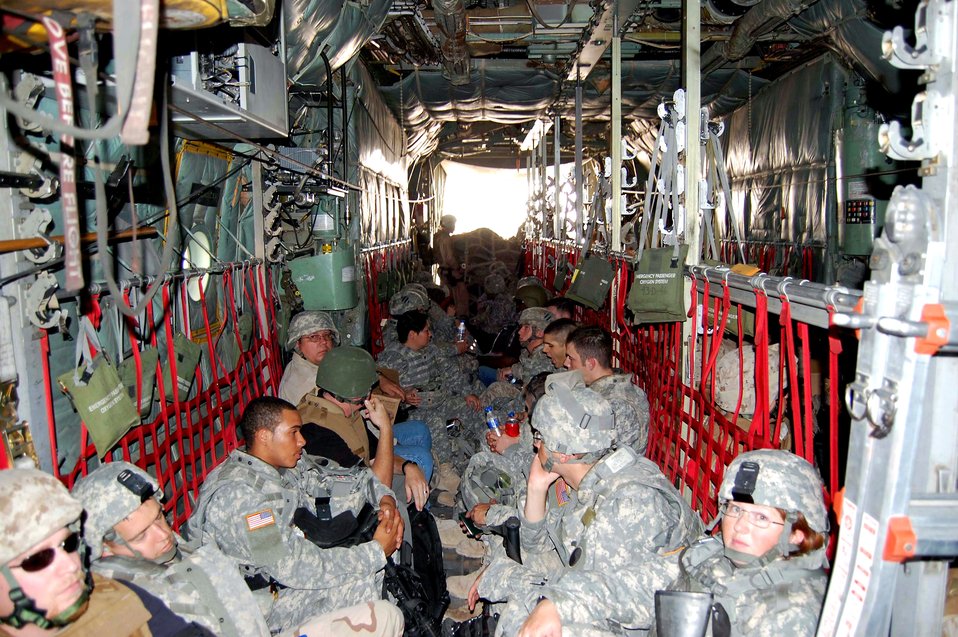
Moving the war: No pain, no gain

C-130 Hercules crew members prepare to transport Soldiers from an undisclosed location in Iraq Oct. 11. Servicemember transport is just one of the many jobs the crew performs.